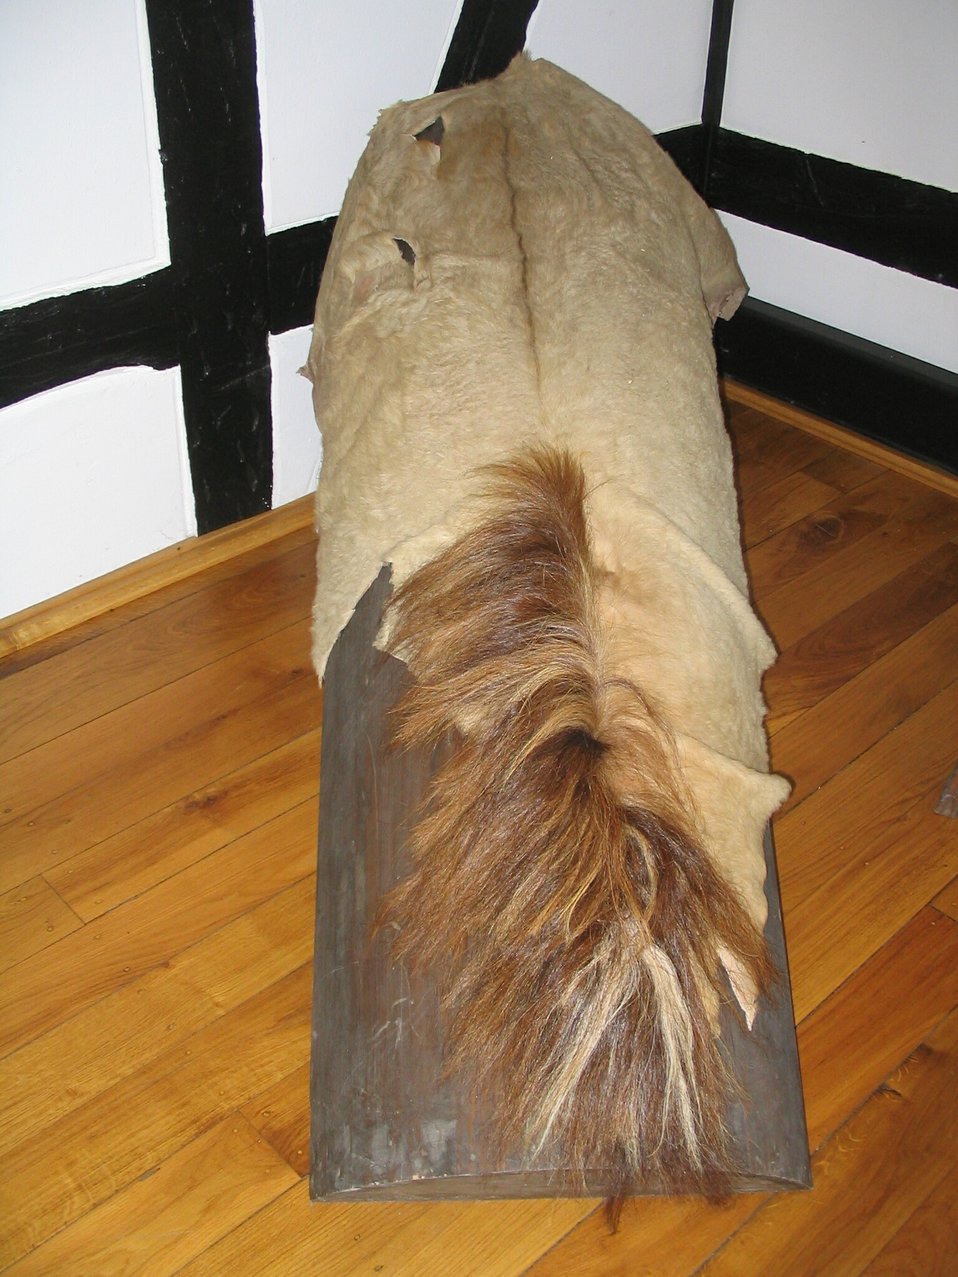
Deutsch: Fohlenfell auf dem Rumpelbaum, Westfälisches Freilichtmuseum Hagen Pony skin, Westfälisches Freilichtmuseum Hagen